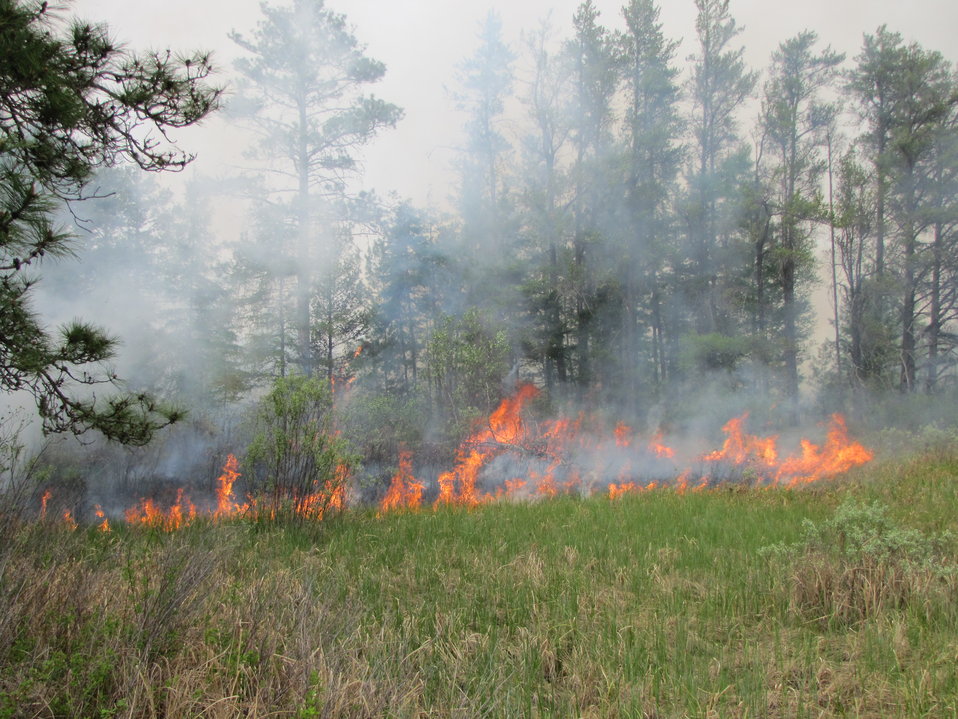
The Back fire

Lighting a back fire off Pine Creek Road to keep the main fire contained.